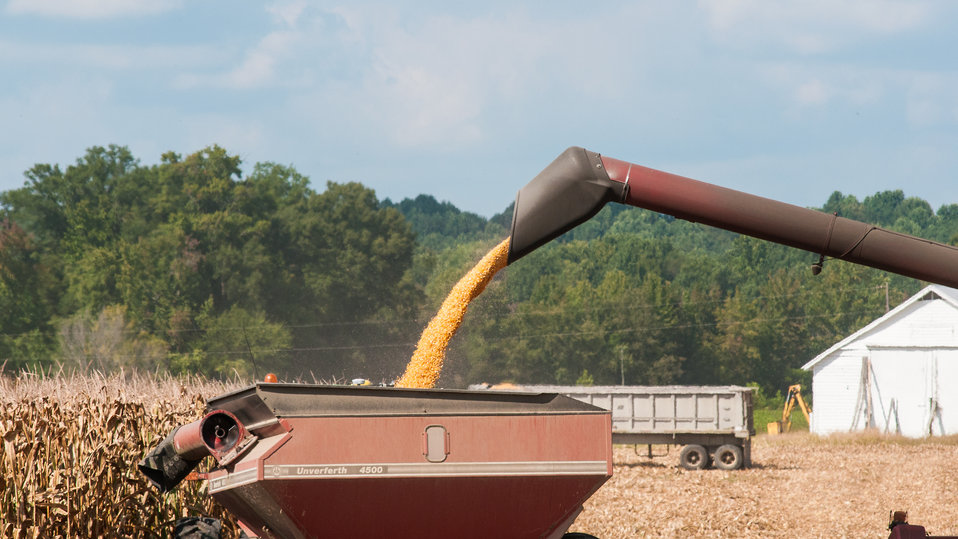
A 12-row corn harvester corn harvester cuts corn from which the kernels and cornstalks separated during the harvest on Friday, Sept. 20, 2013 harvest, at the John N. Mills & Sons farm; a family owned business located in the Hanover and King William Counties of Virginia. Pleasant Level Farm was the original farm and a Land Grant from King George III of England to Nicholas Mills in 1725. The original acreage has never left the Mills family name and continues to be farmed by the family. Now the farm covers 5,744 acres that produce corn, wheat, soybeans, barley, hay and timber, and pastures a large herd of beef cattle. They have been using conservation and stewardship practices since the 1960s. Some of the efficient practices include no-till planting methods and cover crops to reduce soil erosion and prevent the leaching of nutrients into ground water, as well as livestock stream exclusion. The farm has several conservation easements that aids in the preservation and restoration of wetlands and waterways. For information about the U.S. Department of Agriculture (USDA), please go to www.usda.gov.